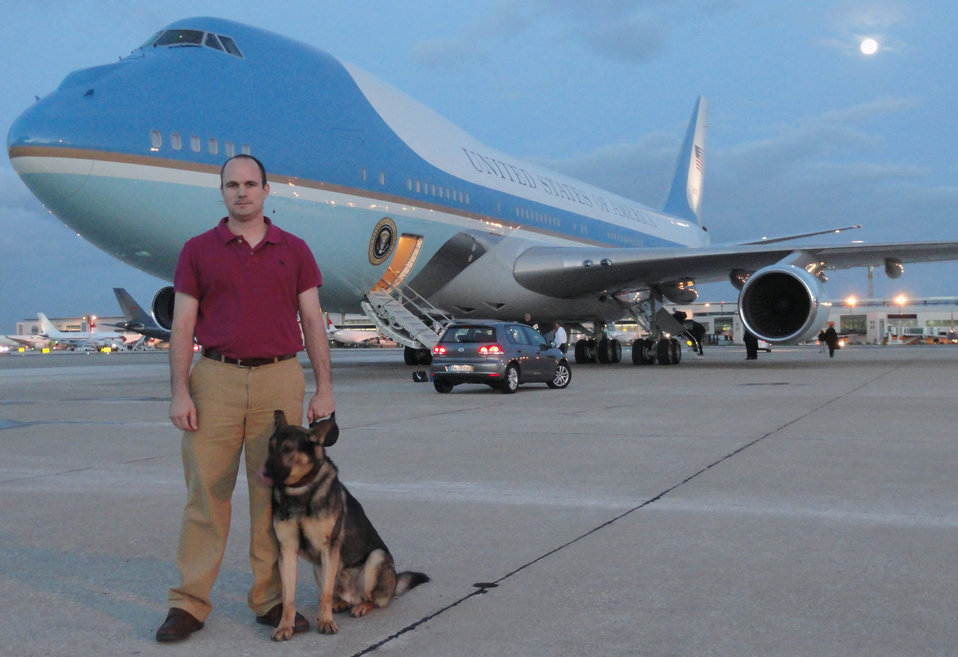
Lajes Airman, K-9 provide unique service at G40 summit

Staff Sgt. Curtis Locke and his K-9, Devil, deployed to Lisbon, Portugal, Nov. 15, 2010, through 22, 2010, to help provide the presidential jet with a specialized detection capability for Air Force One at the G40 summit. Sergeant Locke is assigned to the 65th Security Forces Squadron.